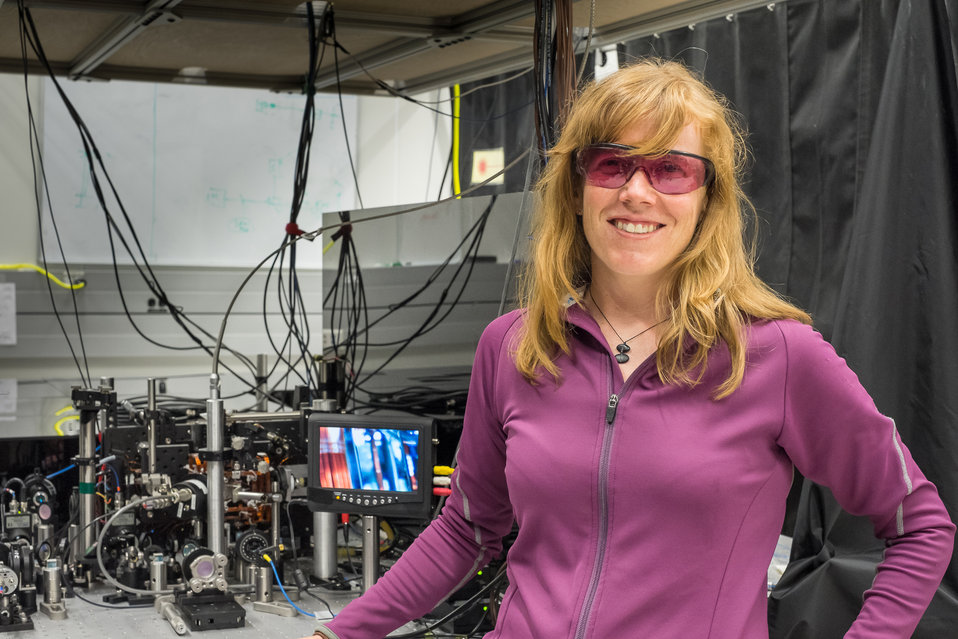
NIST physicist Elizabeth Donley with a compact atomic clock design that could help improve precision in ultraportable clocks. About 1 million cold rubidium atoms are held in a vacuum chamber in the lower left of the photo. On the screen is a close-up of the atom trapping region of the apparatus.